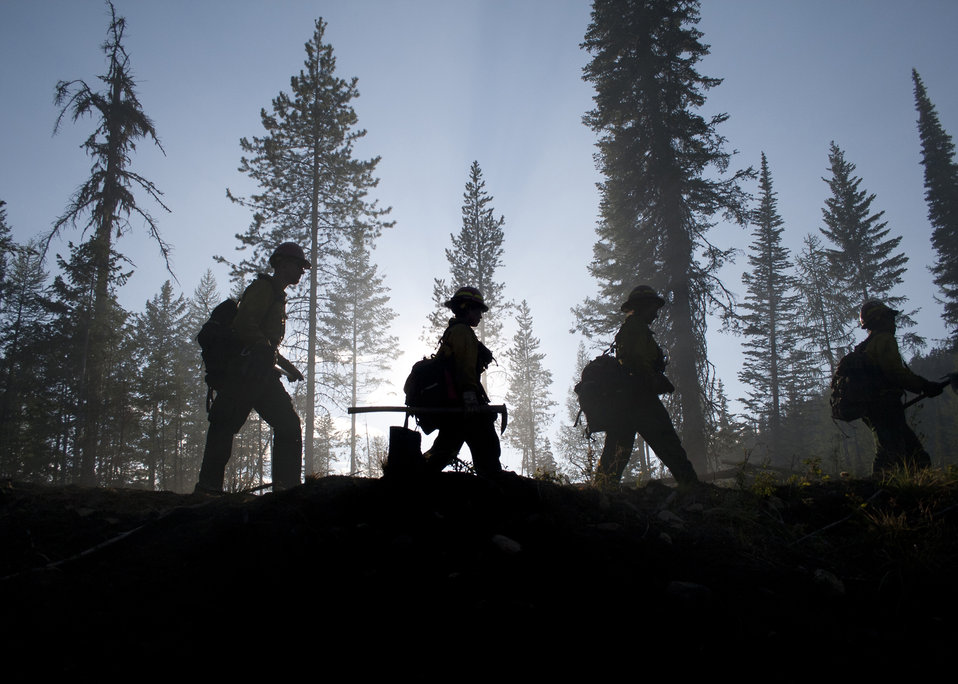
98 firefighters with support from three fire engines, two helicopters, two water tenders, a dozer and an air tanker battled to contain the 90 acre Rogers Fire located on Mt. Rogers five miles west of Aladdin, WA on the Coleville National Forest. Firefighters worked under adverse conditions with steep terrain, heavy timber and gusting winds to reduce the loss of timber and protect the Rogers Mountain Trail. The Rogers Fire began on Aug. 9, 2011 and was controlled by Aug. 19, 2011 with mop up crews ensuring that no flare-ups occurred. Colville National Forest has 1.1 million acres in northeastern Washington and includes the Kettle River, Selkirk mountain ranges, and the upper reaches of the Columbia River.